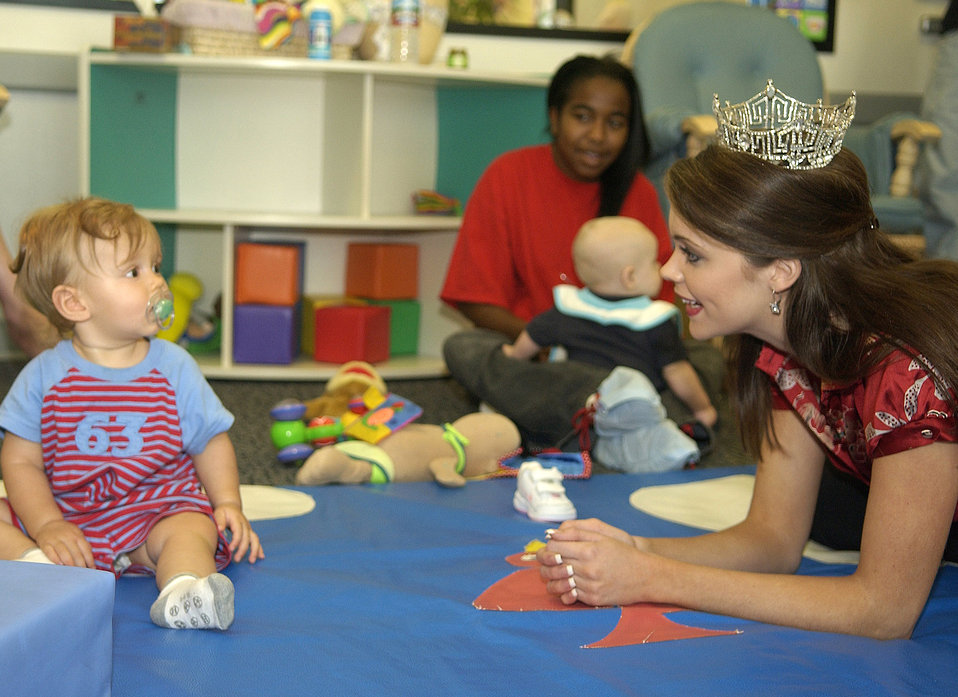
Miss America shares message during base visit

Miss America Jennifer Berry plays with a child at the child development center at Los Angeles Air Force Base, Calif., during her tour of the base Sept. 12.